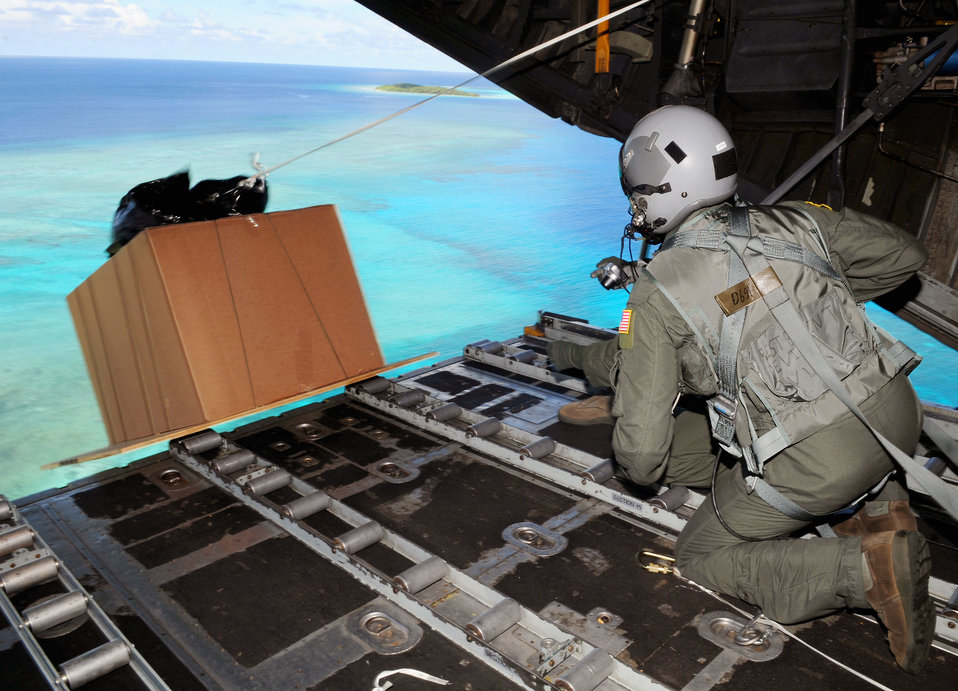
Operation Christmas Drop a team effort

Senior Airman Joseph Doria and Capt. Stanley Kimball watch after pushing a box of humanitarian assistance goods out of a U.S. Air Force C-130 Hercules, call sign